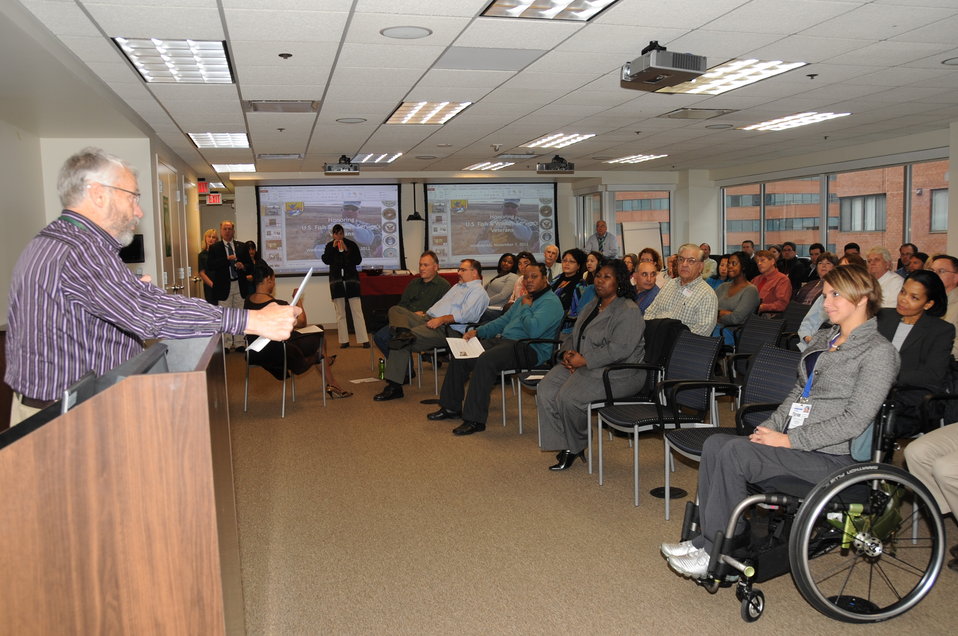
Honoring and Celebrating our Veterans

11.07.2012 Employees gathered in the Arlington Office to honor FWS Veterans